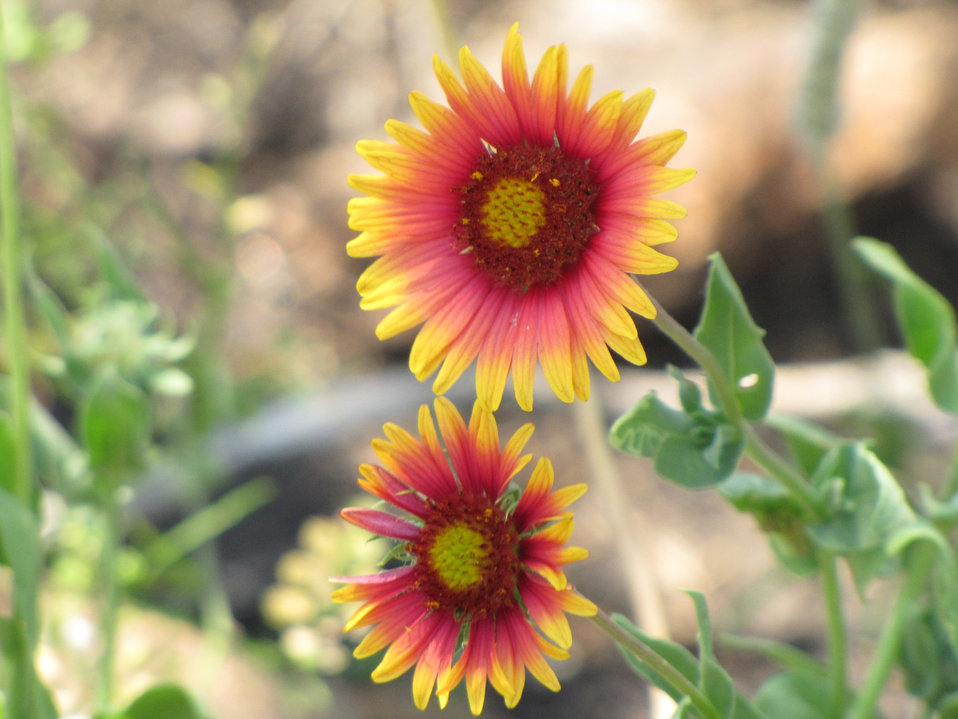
Indian blanket, gaillardia pulchella

Wildflowers at Wichita Mountains Wildlife Refuge in Oklahoma.